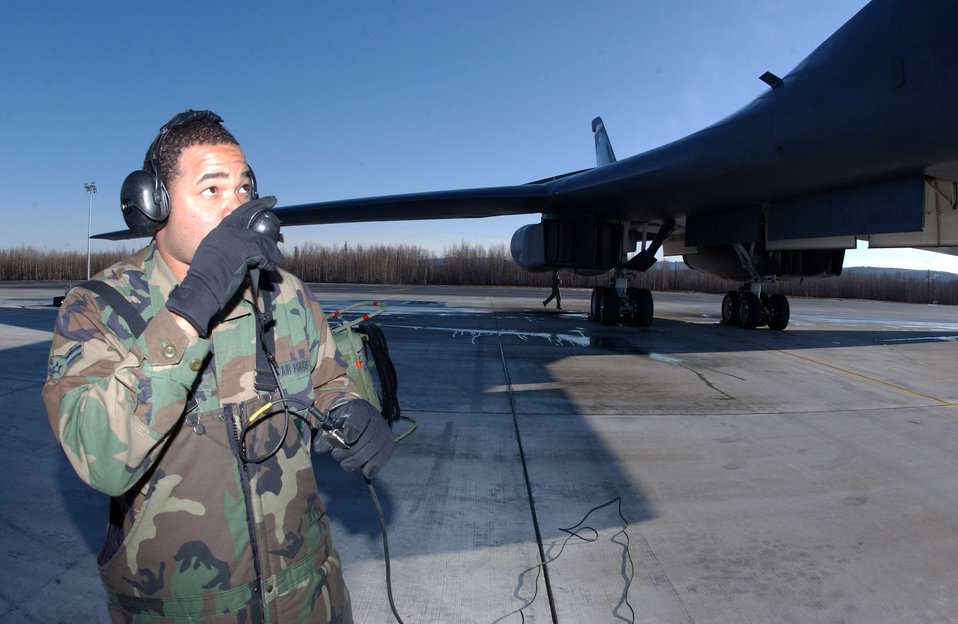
Air combat ready at Red Flag-Alaska

Airman 1st Class Willis Octavius talks to the pilots of a B-1B Lancer April 13 at Eielson Air Force Base, Alaska, during Red Flag-Alaska 07-1. Red Flag-Alaska is a Pacific Air Forces-directed field training exercise for U.S. forces flown under simulated air combat conditions. It is conducted on the Pacific Alaskan Range Complex with air operations flown out of Eielson and Elmendorf Air Force Bases. Airman Octavius is assigned to the 28th Aircraft Maintenance Squadron at Ellsworth AFB, S.D.